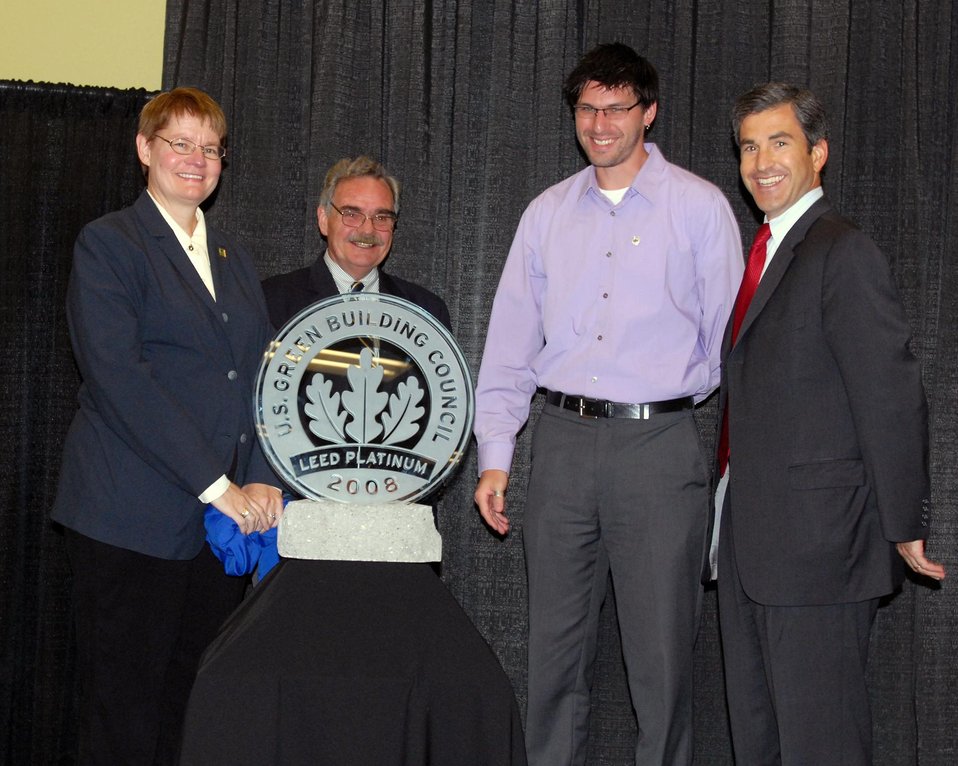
From left, Jane Powell, U.S. Department of Energy (DOE) Fernald Preserve site manager, Michael Owen, director of the Legacy Management, Shawn Hesse, U.S. Green Building Council (USGBC) representative, and Jeffrey Kupfer, Acting Deputy Secretary of Energy, unveil a plaque presented by USGBC to the Fernald Leadership in Energy and Environmental Design program, making it the first building in Ohio to receive their highest certification.